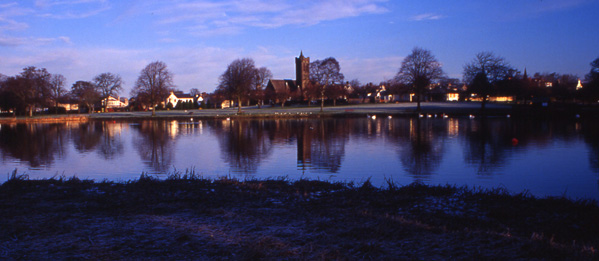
Castle Douglas, Dumfries and Galloway, Scotland viewed across Carlingwark Loch. Gàidhlig: Caisteal Dhùghlais